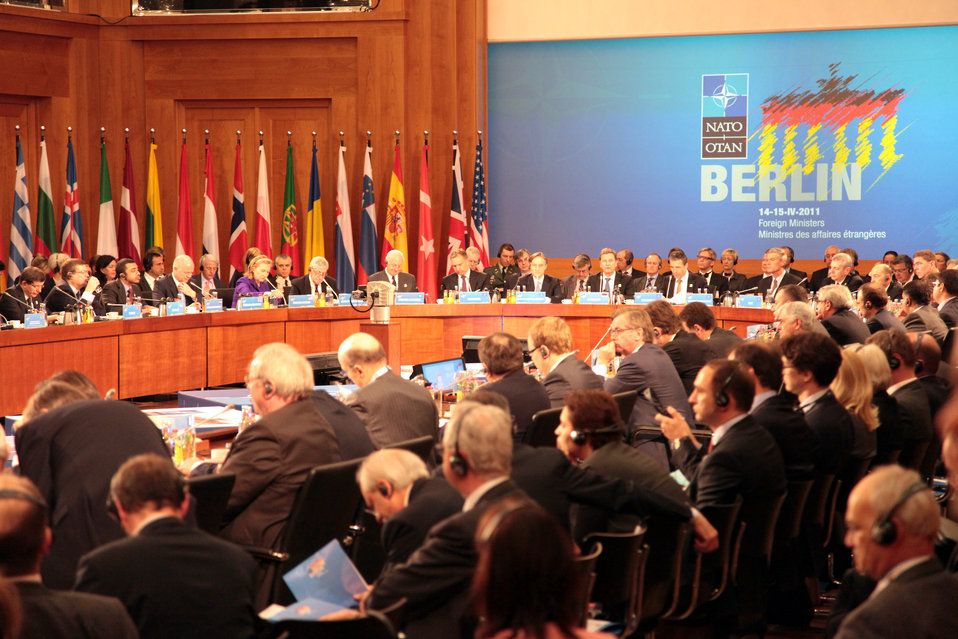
Secretary Clinton Participates in a Meeting of NATO Foreign Affairs Ministers With Non-NATO ISAF Contributing Nations

U.S. Secretary of State Hillary Rodham Clinton participates in a meeting of NATO Ministers of Foreign Affairs with non-NATO International Security Assistance Force (ISAF) contributing Nations in the World Room of the German Ministry of Foreign Affairs in Berlin, Germany, on April 14, 2011.